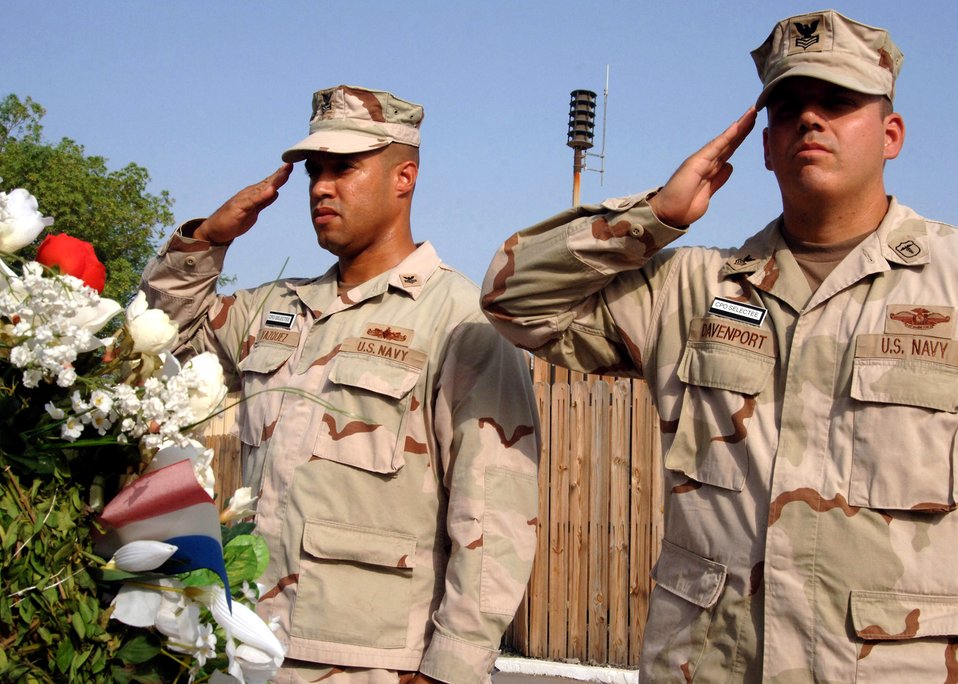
Sept. 11 remembered in Djibouti

Navy Petty Officer 1st Class Arcenet Vazquez and Navy Petty Officer 1st Class Eric Davenport salute during a wreath presentation in remembrance of the 6th anniversary of Sept. 11 at Camp Lemonier, Djibouti. The wreath presentation was one of the remembrance events sponsored by the Combined Joint Task Force-Horn of Africa 2008 Navy chief selectees.